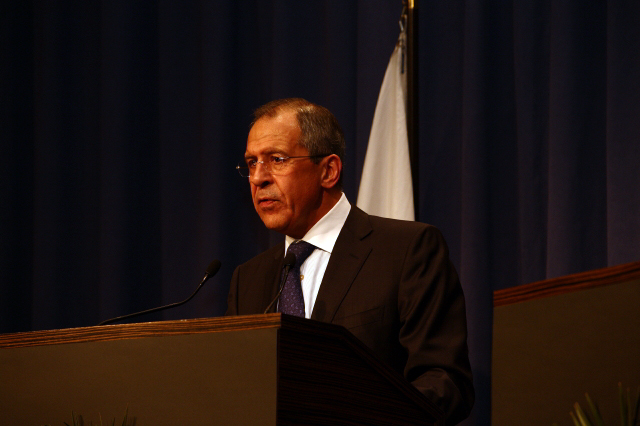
Press Conference With Russian Foreign Minister

Press conference after dinner meeting between U.S. Secretary of State Hillary Rodham Clinton and Russian Foreign Minister Sergey Lavrov in Geneva, Switzerland March 6, 2009.